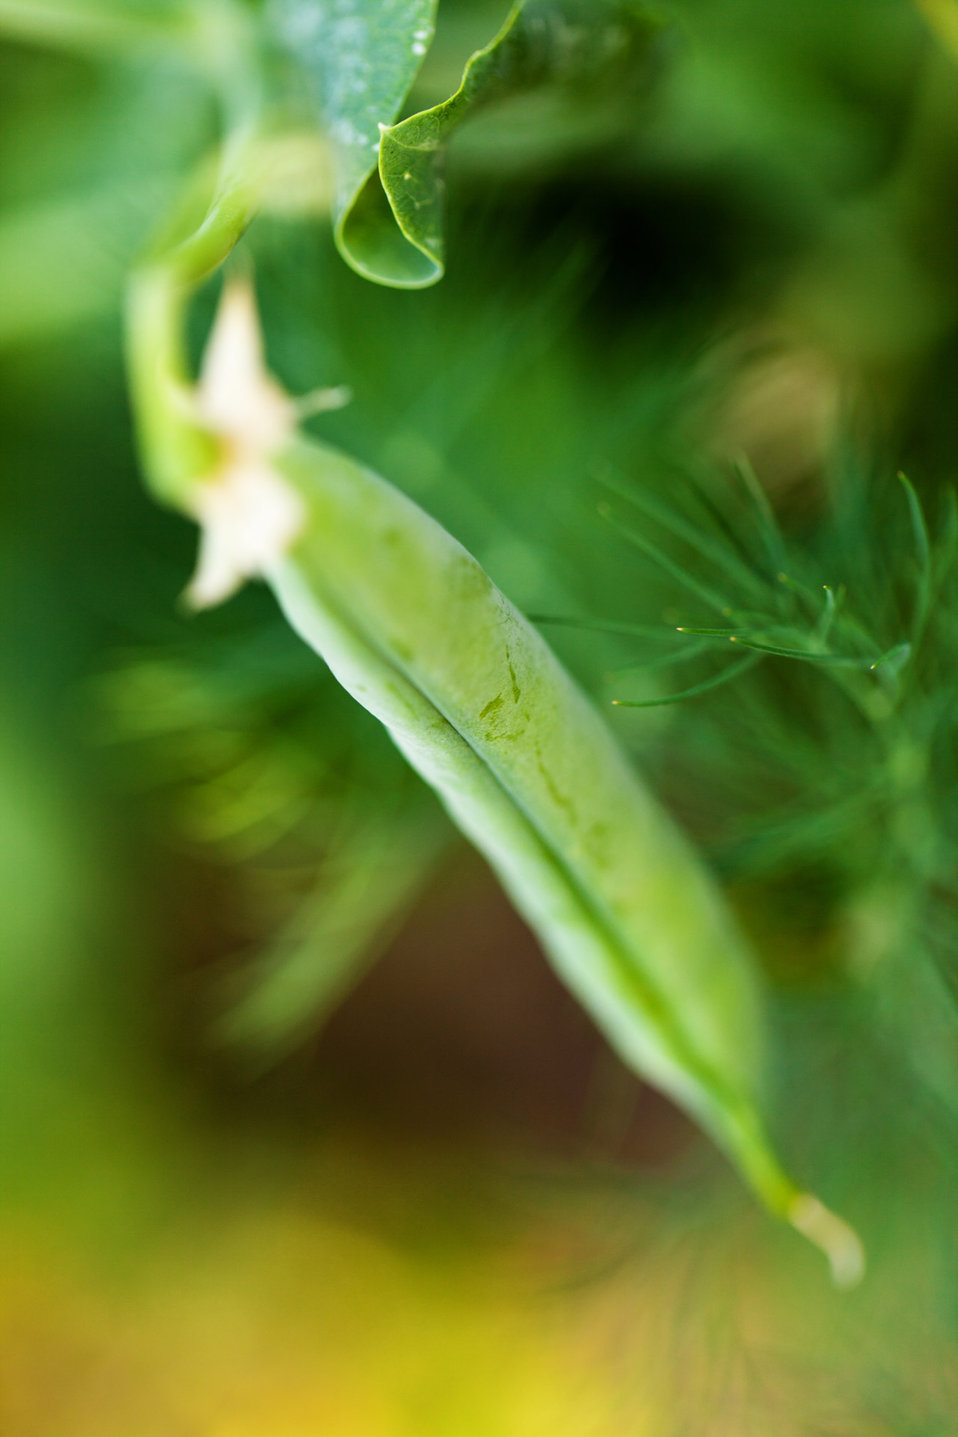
Peapod

Green peapod still growing on a vine.